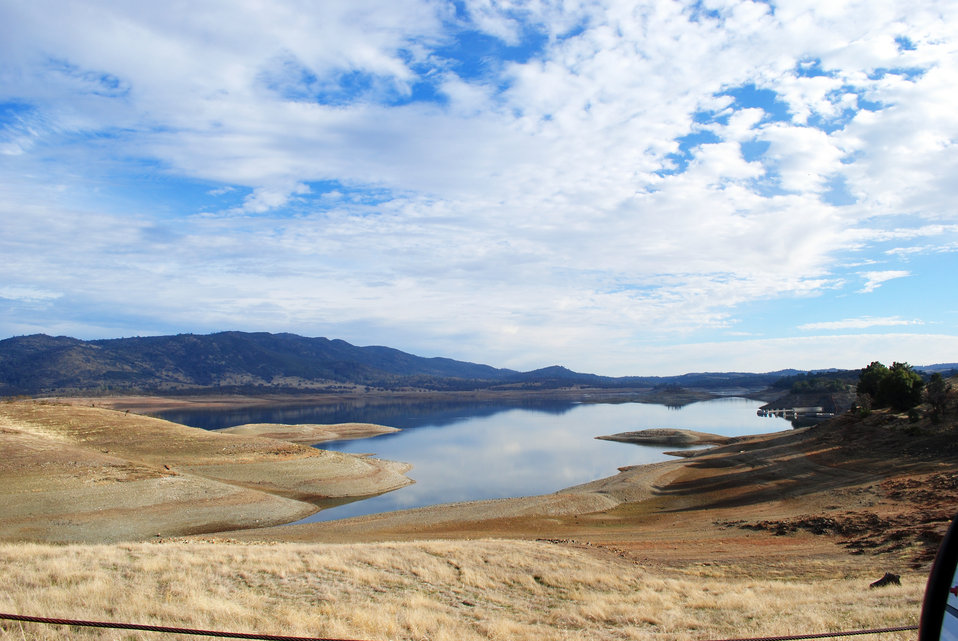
Dry times at New Hogan Lake

140106-A-ZZ999-901 – Overlooking New Hogan Lake, a U.S. Army Corps of Engineers Sacramento District park and recreation area in Valley Springs, Calif., shows the water level significantly lower than usual Jan. 6, 2014 This winter’s unseasonably dry weather has caused many lakes in Northern California to hit record lows.